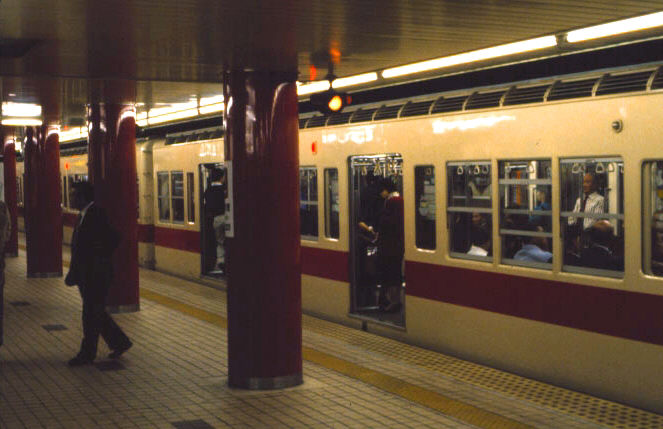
Tokyo subway platform and train.